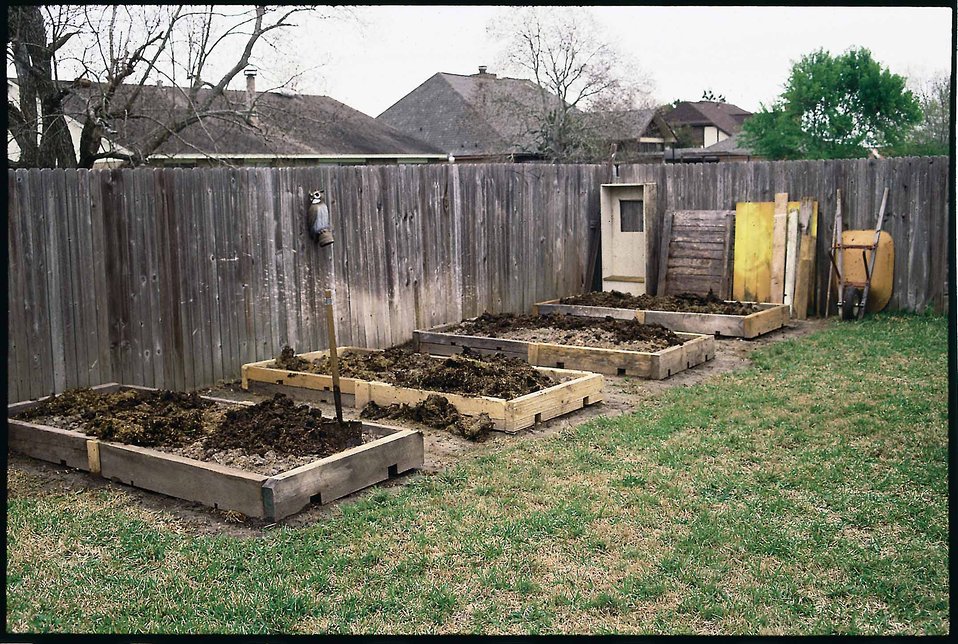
Raised garden beds also serve as rotating compost bins for Ron Francis of Houston.